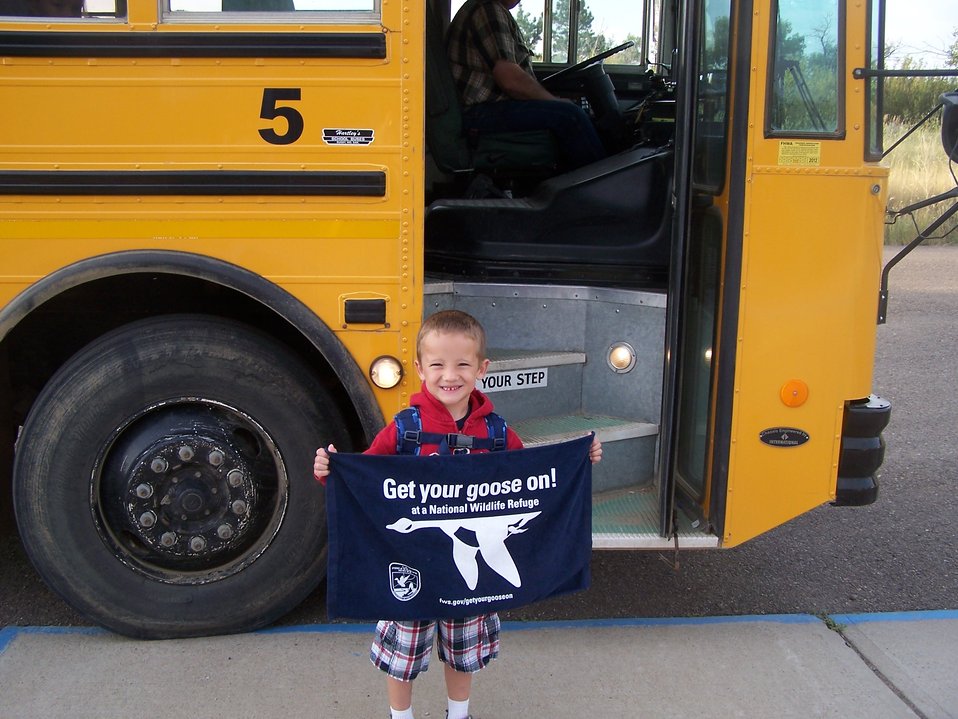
Get Your Goose On! - At the Bus Stop

Assistant Manager, Todd Boonstra's son, Jack, Gets His Goose On while getting picked up for school at Bowdoin NWR.